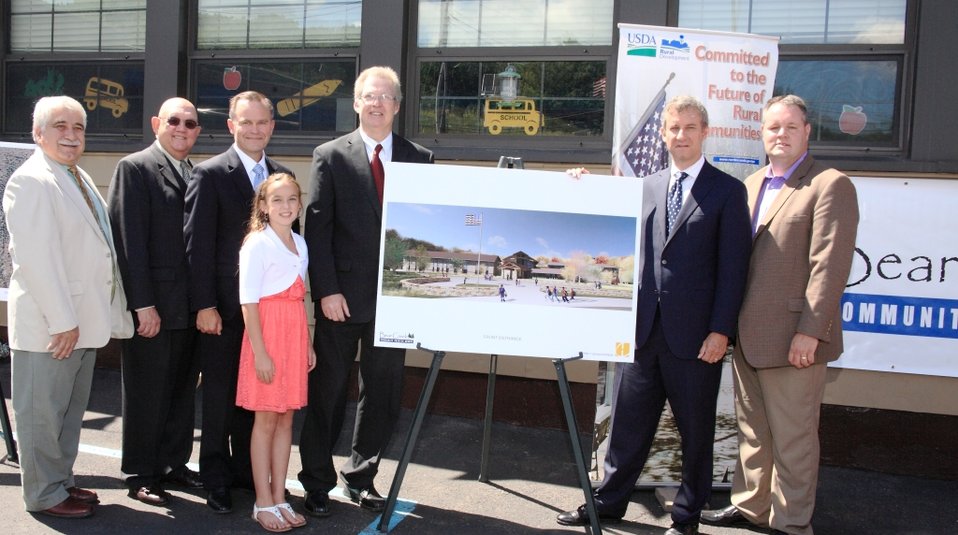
Bear Creek Announcement

(L to R) Pennsylvania Governor Thomas Corbett’s Northeast Regional Office Assistant Director Bill Goldsworthy, Bear Creek Village Borough Mayor Walter Mitchell, Acting Pennsylvania Secretary of Education William Harner, Bear Creek Community Charter School student Gia Stoddard, U.S. Department of Agriculture (USDA) Rural Development (RD) Pennsylvania State Director Thomas Williams, Pennsylvania Congressman Matthew A. Cartwright, and Bear Creek Community Charter School Chief Executive Officer Jim Smith attended the USDA RD funding announcement at the Bear Creek Community Charter School.